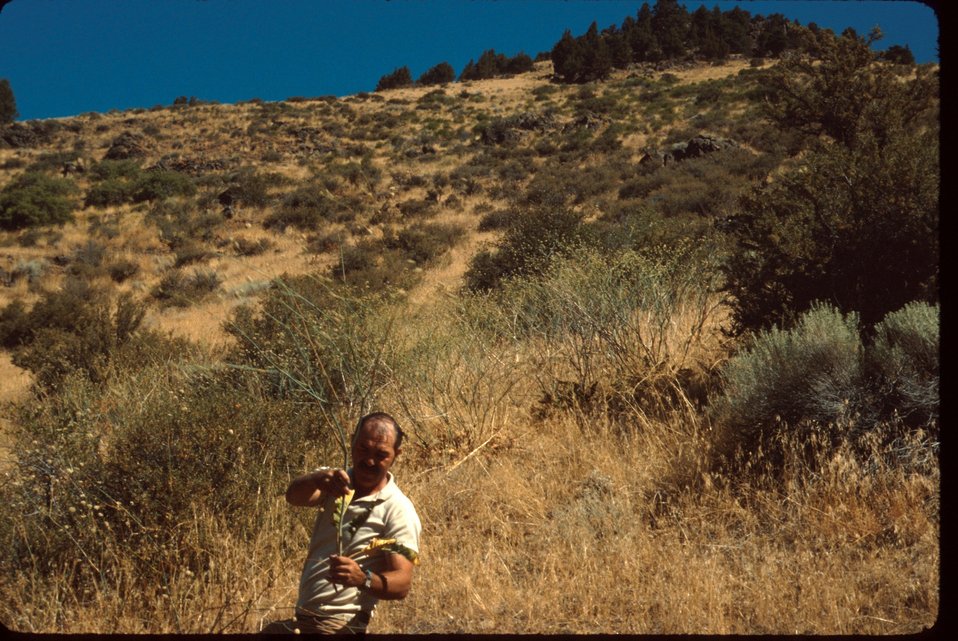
Elymus elatum grass